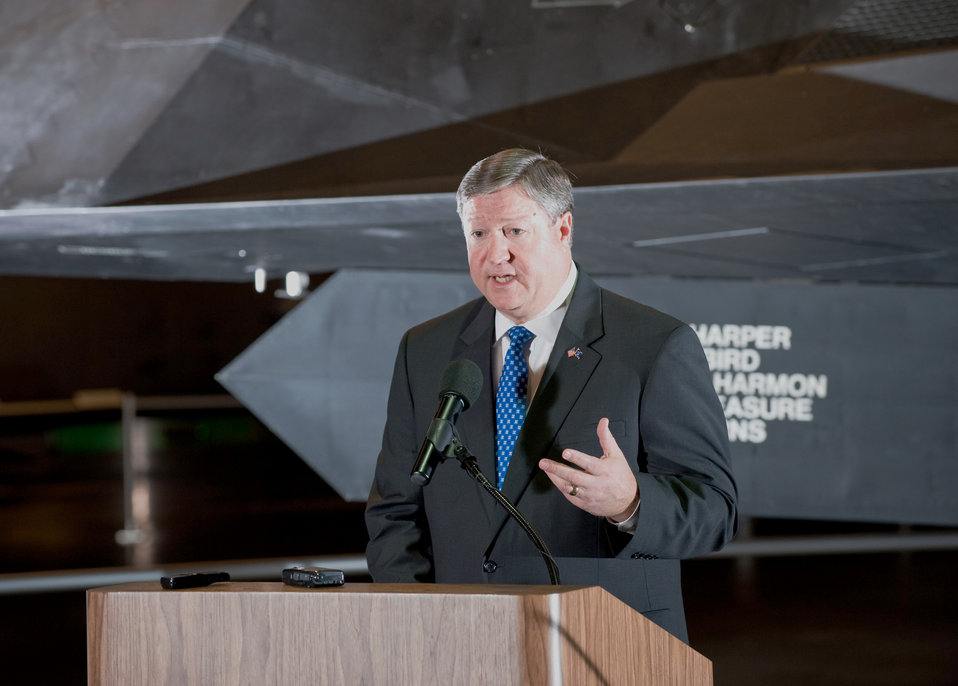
Doolittle Raiders reunite at Air Force museum

Secretary of the Air Force Michael Donley addresses reporters prior to a dinner honoring the Doolittle Tokyo Raiders April 16, 2010, at the National Museum of the U.S. Air Force at Wright-Patterson Air Force Base, Ohio.